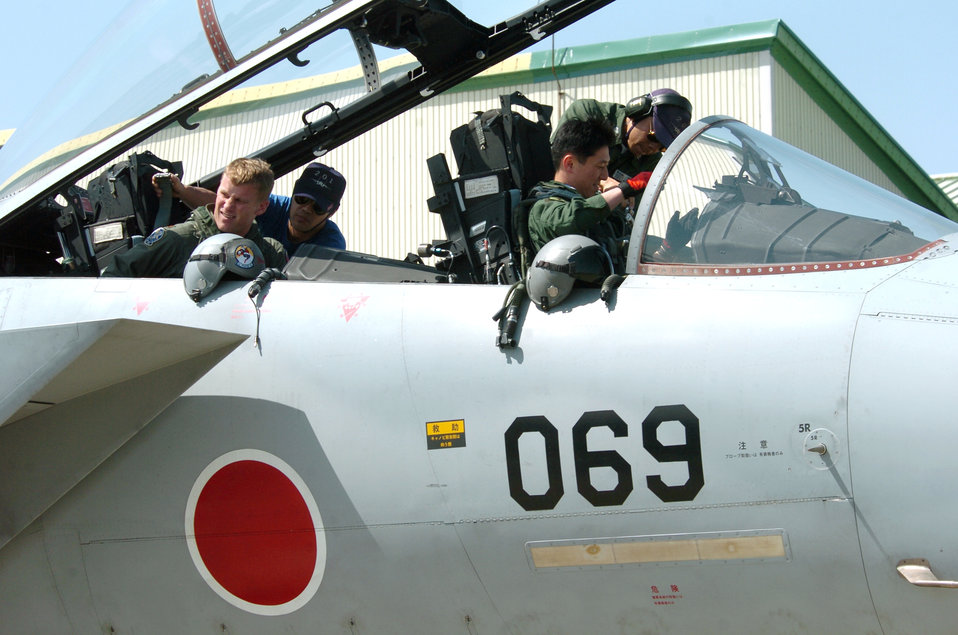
U.S., Japanese Airmen train together during air refueling

NYUTABARU AIR BASE, Japan -- Maj. Brian Bergeron (left) and Japanese Maj. Kouji Takada prepare to take off for an afternoon mission during hands-on air-to-air refueling training here. Japanese F-15 Eagle pilots, under the watchful eye of U.S. Airmen, are getting trained to qualify in aerial refueling. Major Bergeron is an instructor pilot with the 325th Operations Support Squadron at Tyndall Air Force Base, Fla.